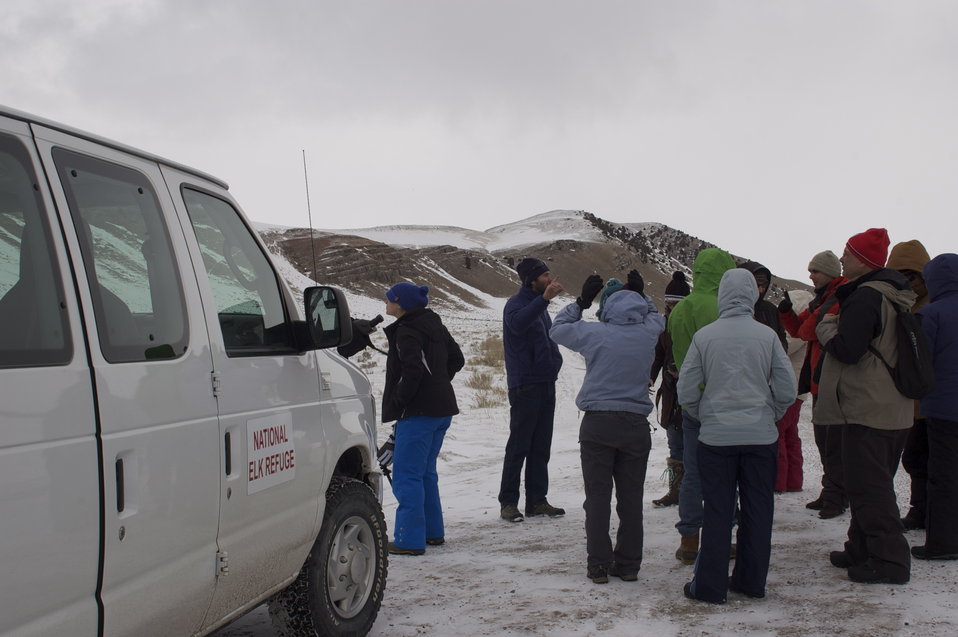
Reservations Recommended

The winter wildlife excursions are offered free of charge and fill up quickly. Reservations are recommended.